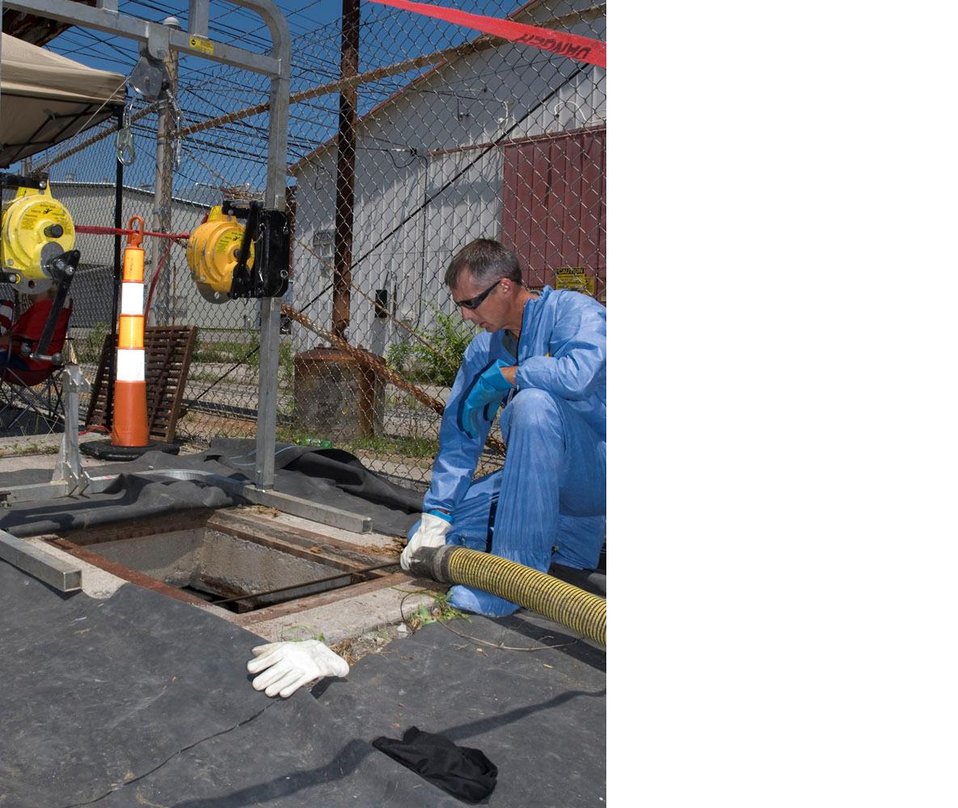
Recovery Act Funds Accelerate Regulatory Milestone Achievement in Oak Ridge

Through the Recovery Act, Oak Ridge and DOE sites around the country now have funds to accomplish key milestones assigned by regulators, and projects that ensure a safer, cleaner environment.